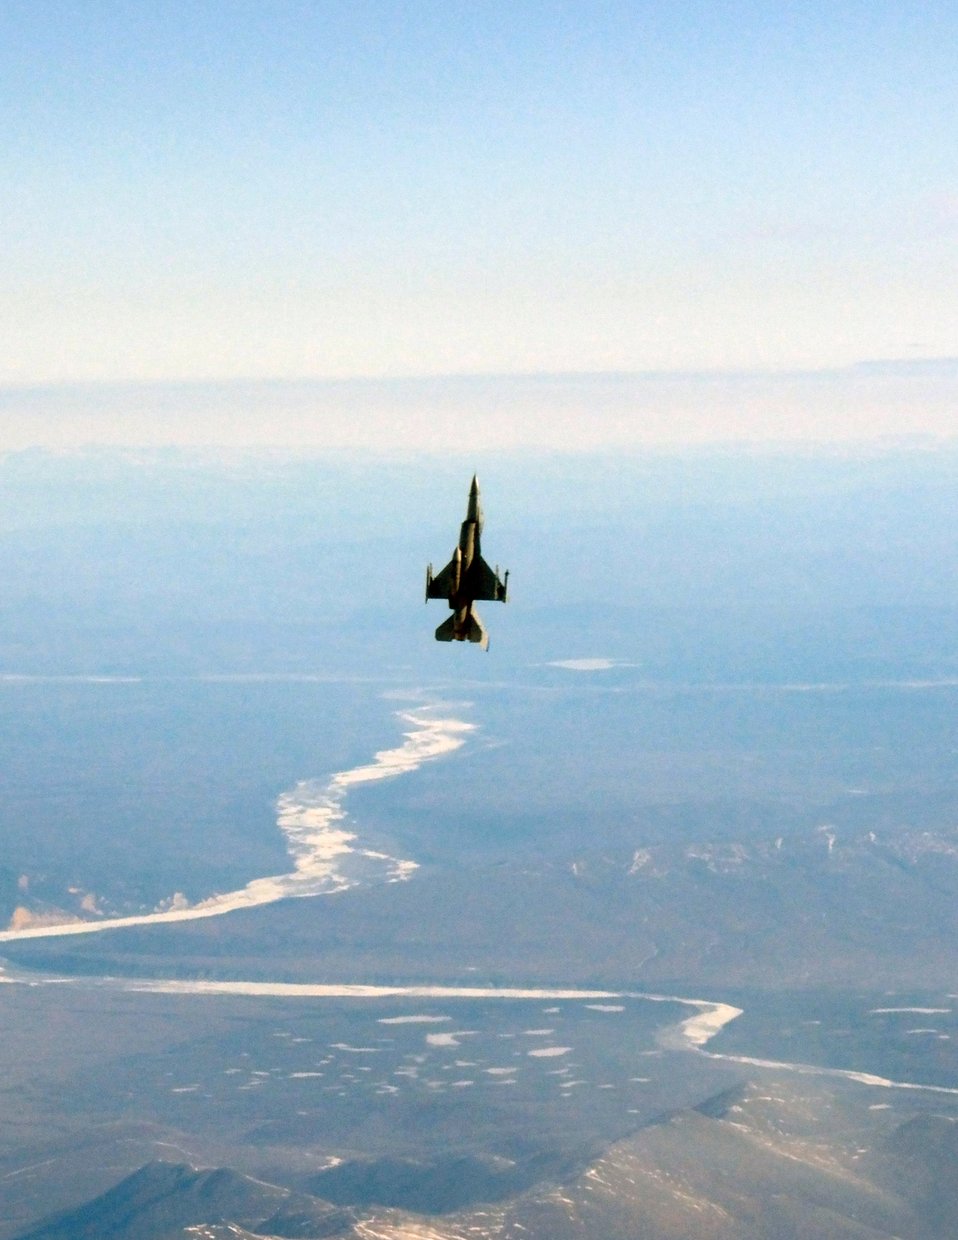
Show of force

An F-16 Fighting Falcon from performs a max climb April 25 over the Pacific Alaska Range Complex. The F-16 is assigned to the 18th Fighter Squadron at Eielson Air Force Base, Alaska. The 18th FS conducts air operations for combat-ready F-16 aircraft, working closely with the 355th Fighter Squadron to provide close-air support, forward-air control (airborne), battlefield air interdiction, and offensive counter air.